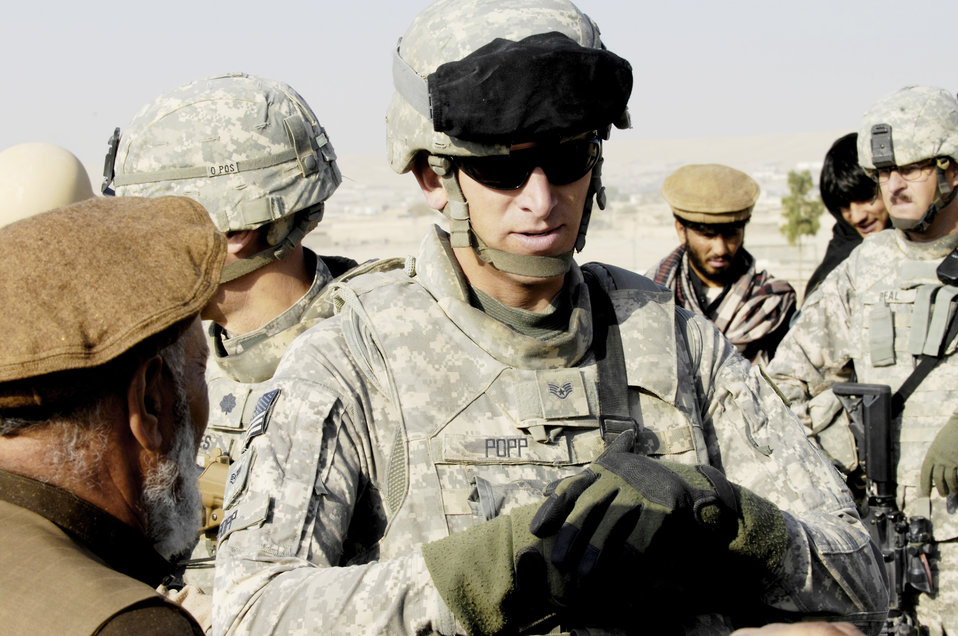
Security forces Airmen, Soldiers mentor Afghan prison guards

Staff Sgt. David Popp meets with Afghan prison officials during a mentoring session Oct. 28, 2009, in Qalat, Afghanistan. Sergeant Popp, a security forces Airman assigned to the Zabul Provincial Reconstruction Team, is deployed to the region from Creech Air Force Base, Nev. He works with the guards, helping them become better at handling prisoners within the compound. The mission is just one of many the PRT takes on, which can range from foot patrols to working with government officials.